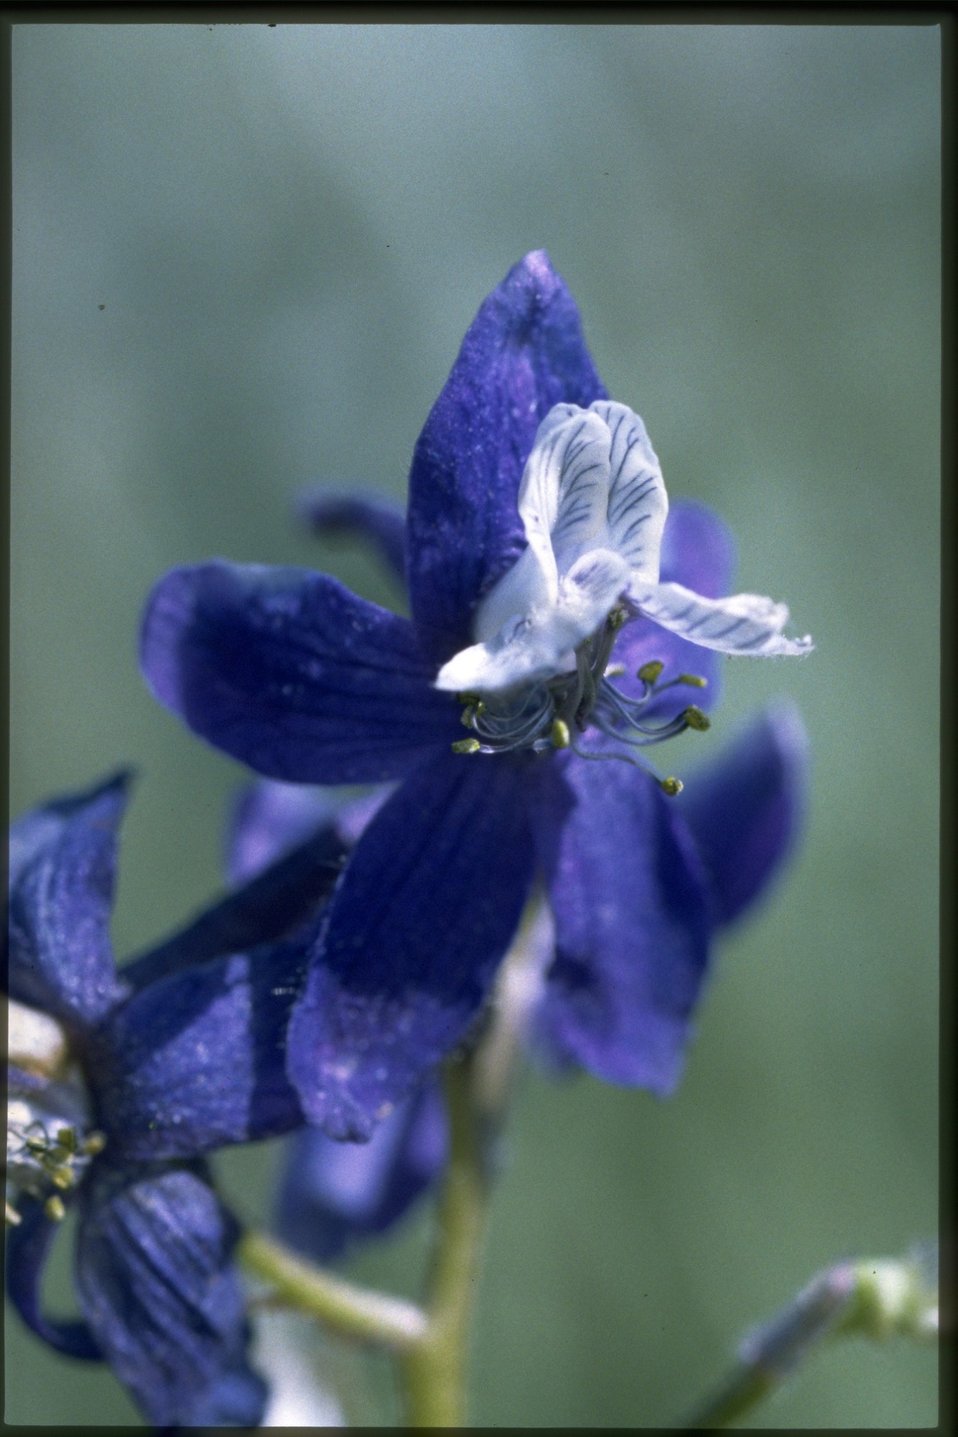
Closeup shot of Larkspur wildflowers (Delphinium Sp.).